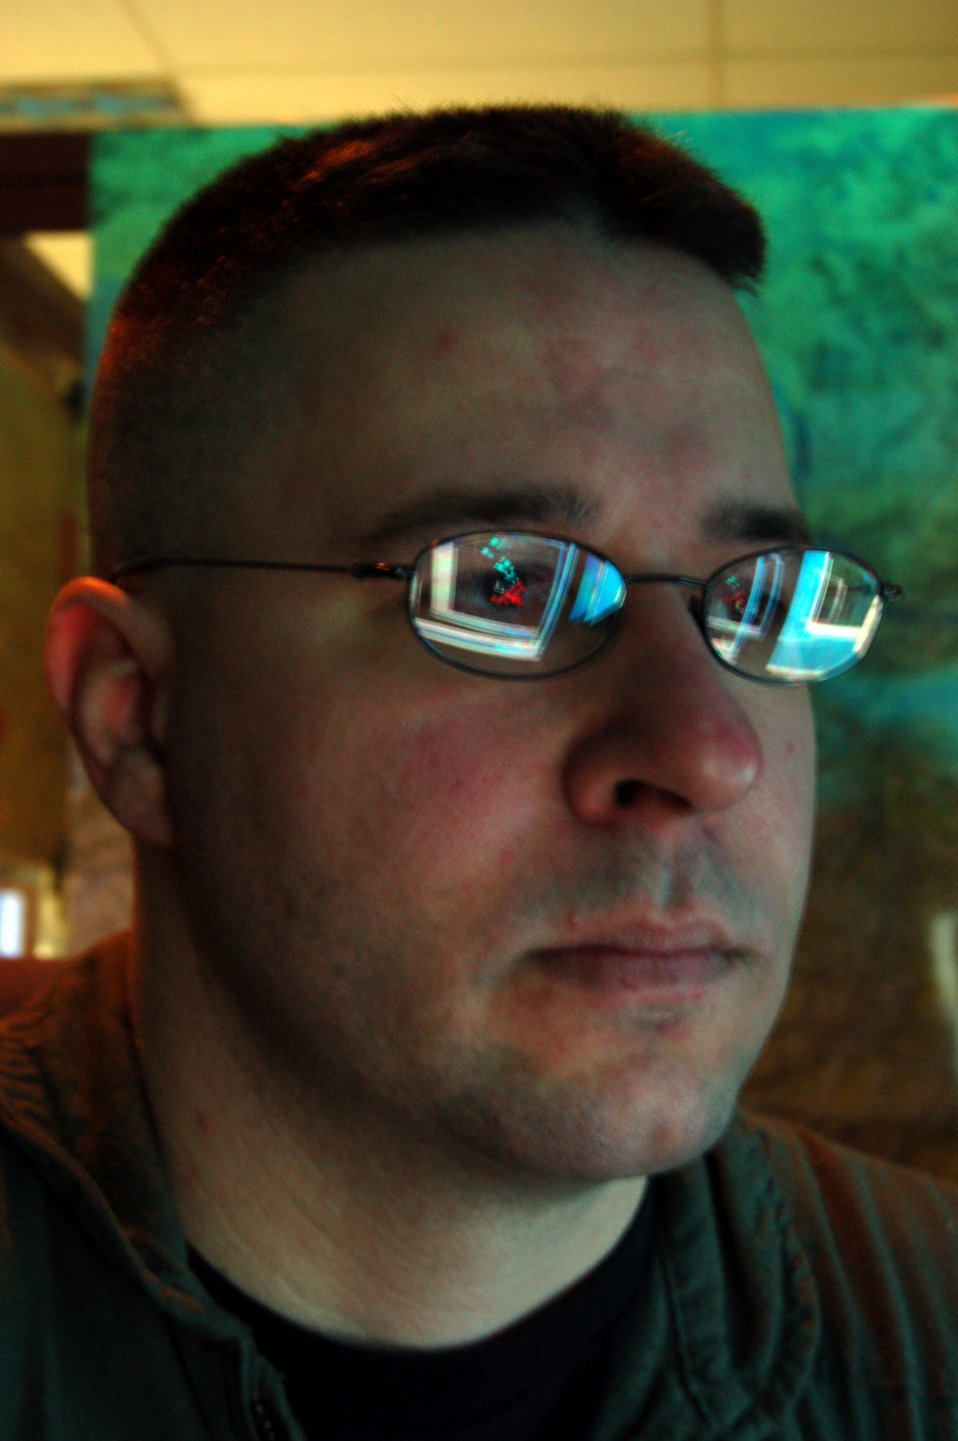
Eielson Airmen get aggressive about training

Capt. Ron Strobach, in the White Forces control center at Eielson Air Force Base, Alaska, reviews the video of an engagement between Red and Blue Forces during a Red Flag-Alaska exercise. The control center is the nerve center for all exercise operations. Eielson's exercise role is transitioning from Cope Thunder exercises to Red Flag-Alaska. Captain Strobach is the lead Red Air Range training officer for the 353rd Combat Training Squadron. He also is the chief of command and control, intelligence, surveillance and reconnaissance operations for the unit.